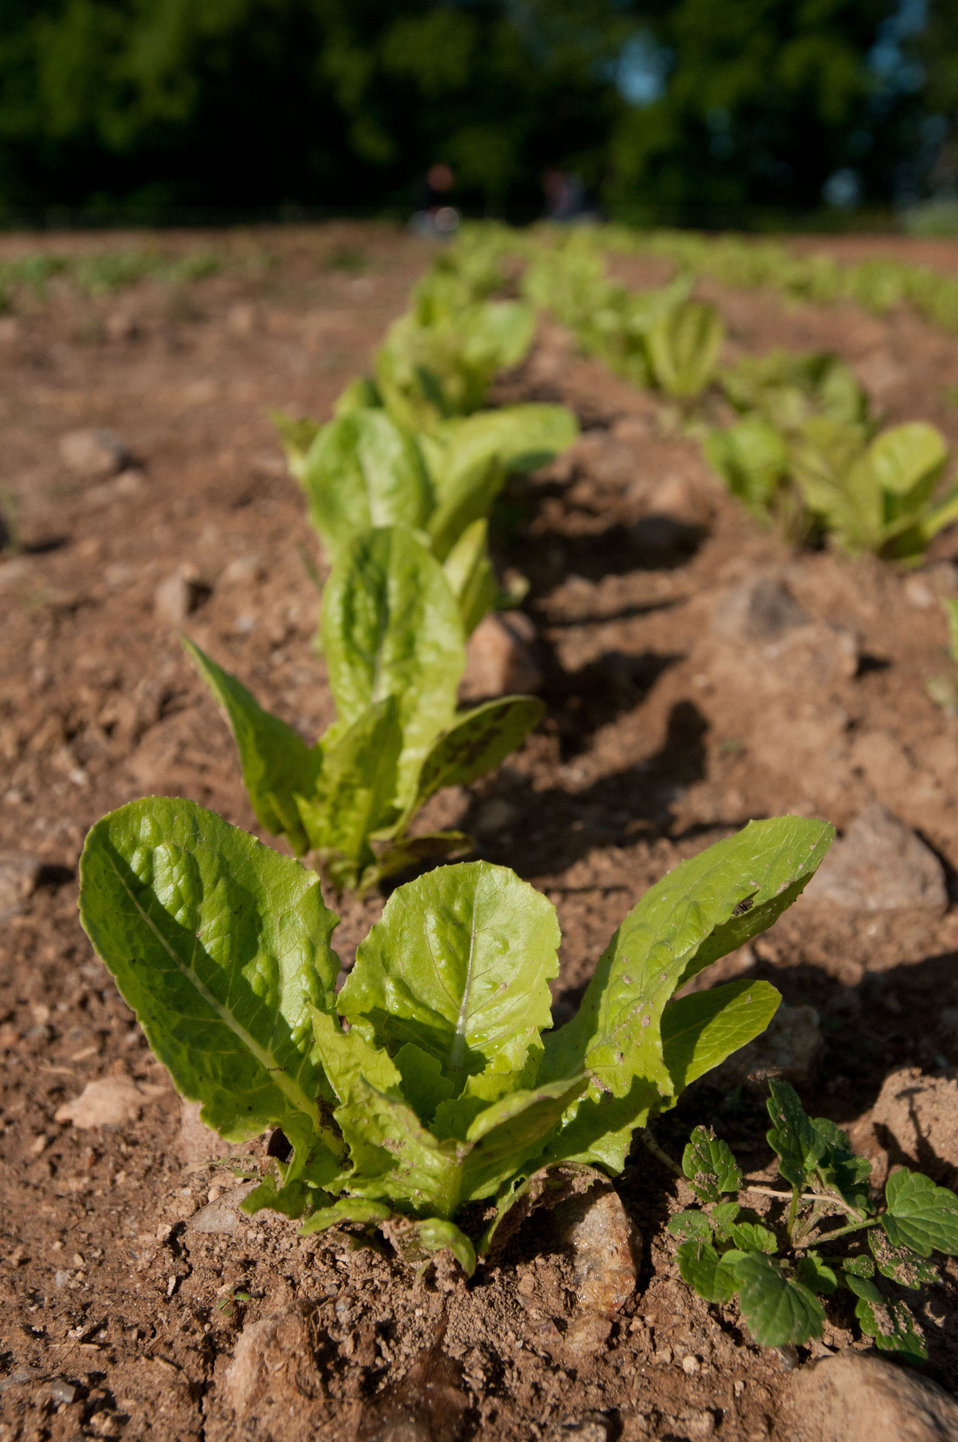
Andrew Myers (left) and Christopher Douherty hand harvest baby-lettuce leaves at the Manakintowne Specialty Growers, a 21-acre farm in Powhatan County, Virginia, on Friday, May 6, 2011. Specialty produce for chefs and markets of Richmond, Charlottesville and Williamsburg, is raised on the farm. The plants continue to grow leaves and can be harvested several times before they have to be replaced. Rotating the crop types and using proper intervals, maintain sustainable soil and plant health. This is one of the farms that produces unique greens such as French Sorrel, Pea Shoots, Frisee, Tat soi, Mizuna, Pink/green radish shoots, Sunflower shoots, Baby red mustard, Tuscan Kale, Beet greens. All harvested by hand, micro greens such as Pak choi, Tat soi, Mizuna, Purple kohlrabi, Shungiku (edible chrysanthemum), Ruby chard, Purple/Daikon/Triton radish, Red amaranth and Bull's Blood Beet as well as edible flowers such as African Blue Basil, Nasturtiums, Johnny Jump Ups, and Chive blossoms Dianthus (pinks).. The seasonal choices are listed by suppliers and ordered by members on Lulus Local Food website, the food is distributed to pick-up points in the Richmond area. Together, they offer a wide variety of household food staples and specialty fruits, vegetables, meats, soaps, eggs, cheeses, flowers, honey, pastas, sauces, syrups, baked goods, mushrooms, flour and grains from and for the Richmond area.